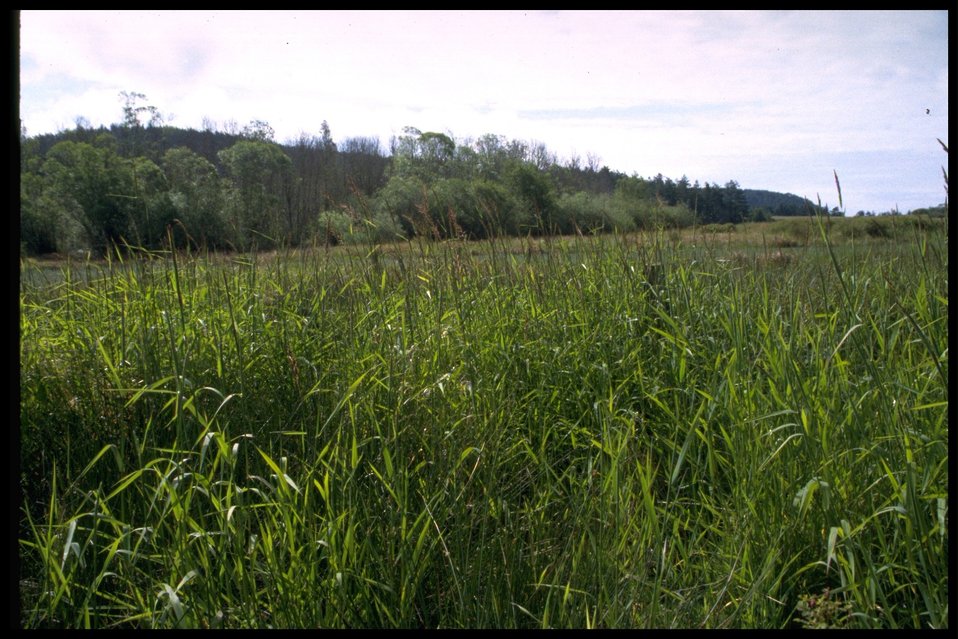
Chadwick Hill Marsh.